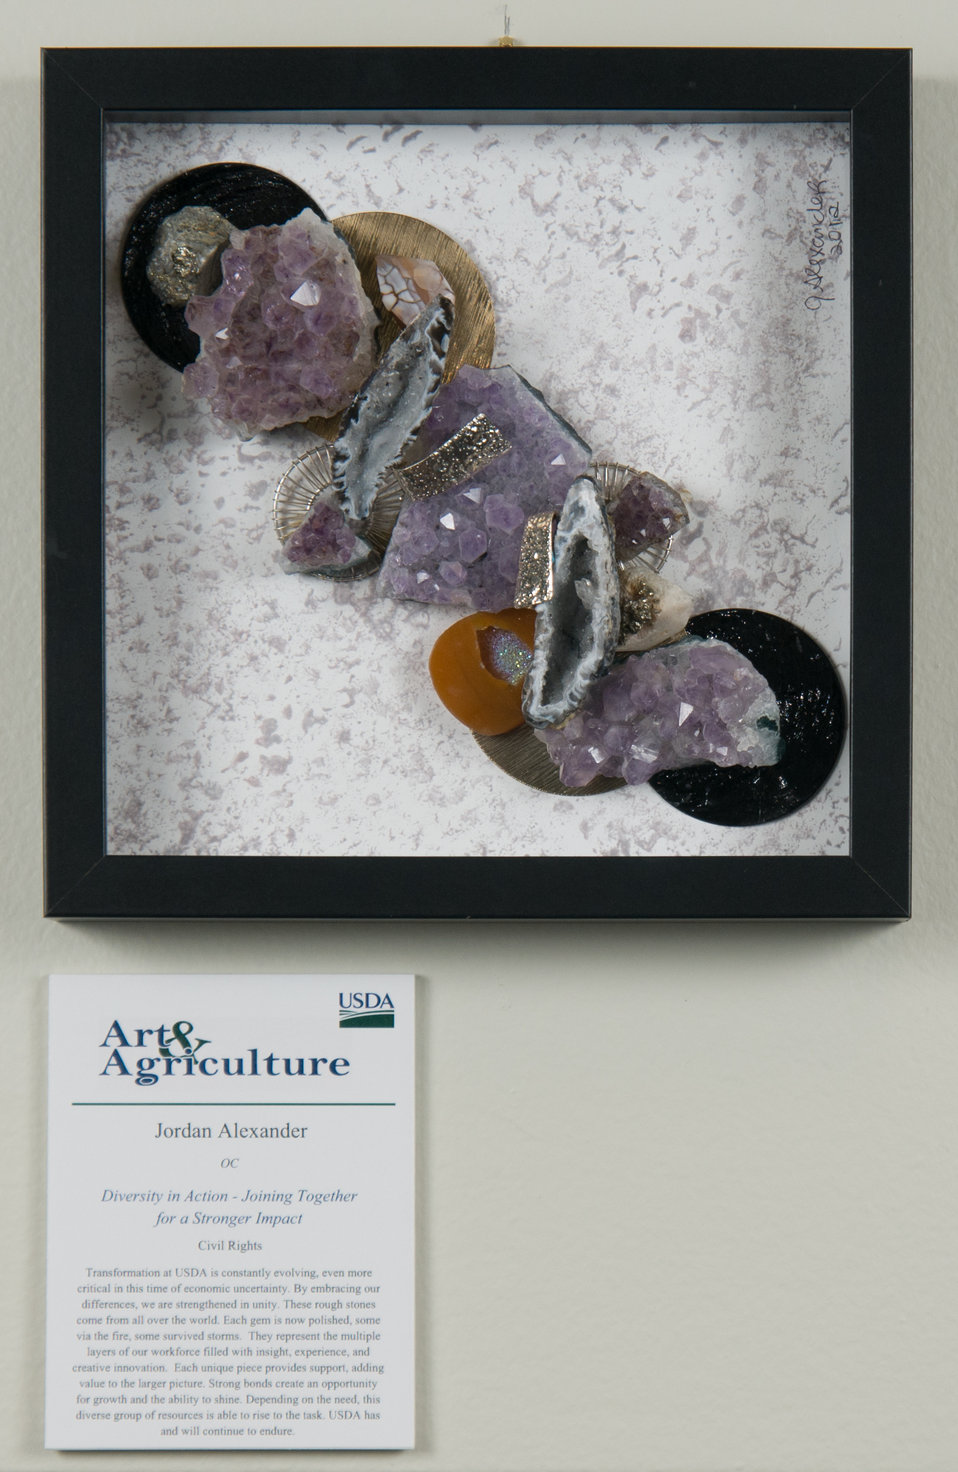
Online Viewer's Choice entries of the 2013 Art & Agriculture, Tuesday, July 9, 2013, in the South Building, Washington, D.C. Themes were expressed by employees from across the department and the contest was open to full-time and part-time USDA employees. Winning artwork will be displayed till the end of the year. U.S. Artistic expression is a creative outlet that is vital for an individual to grow and develop.